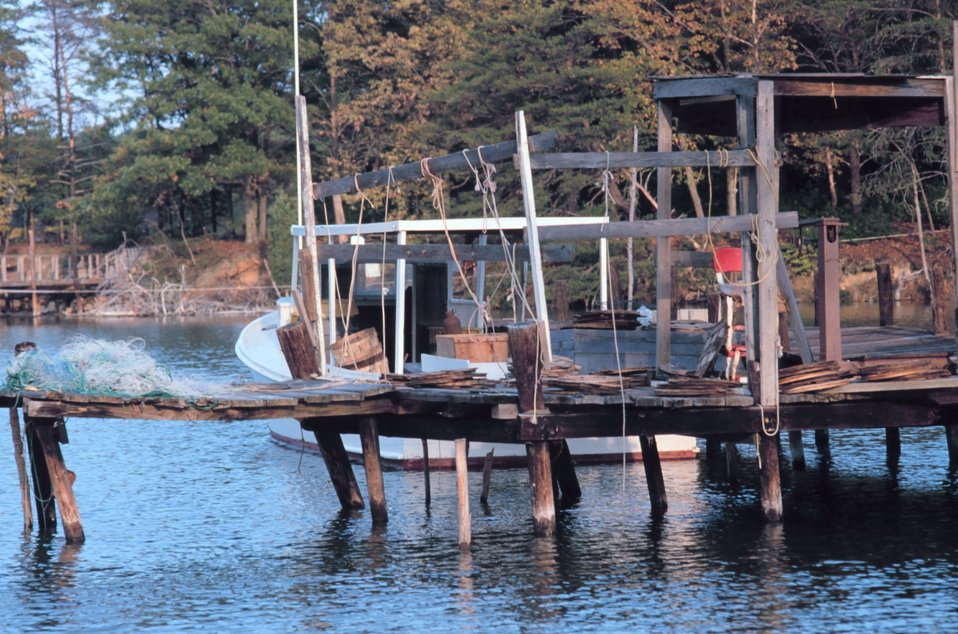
A rather rickety looking home pier for a Chesapeake waterman